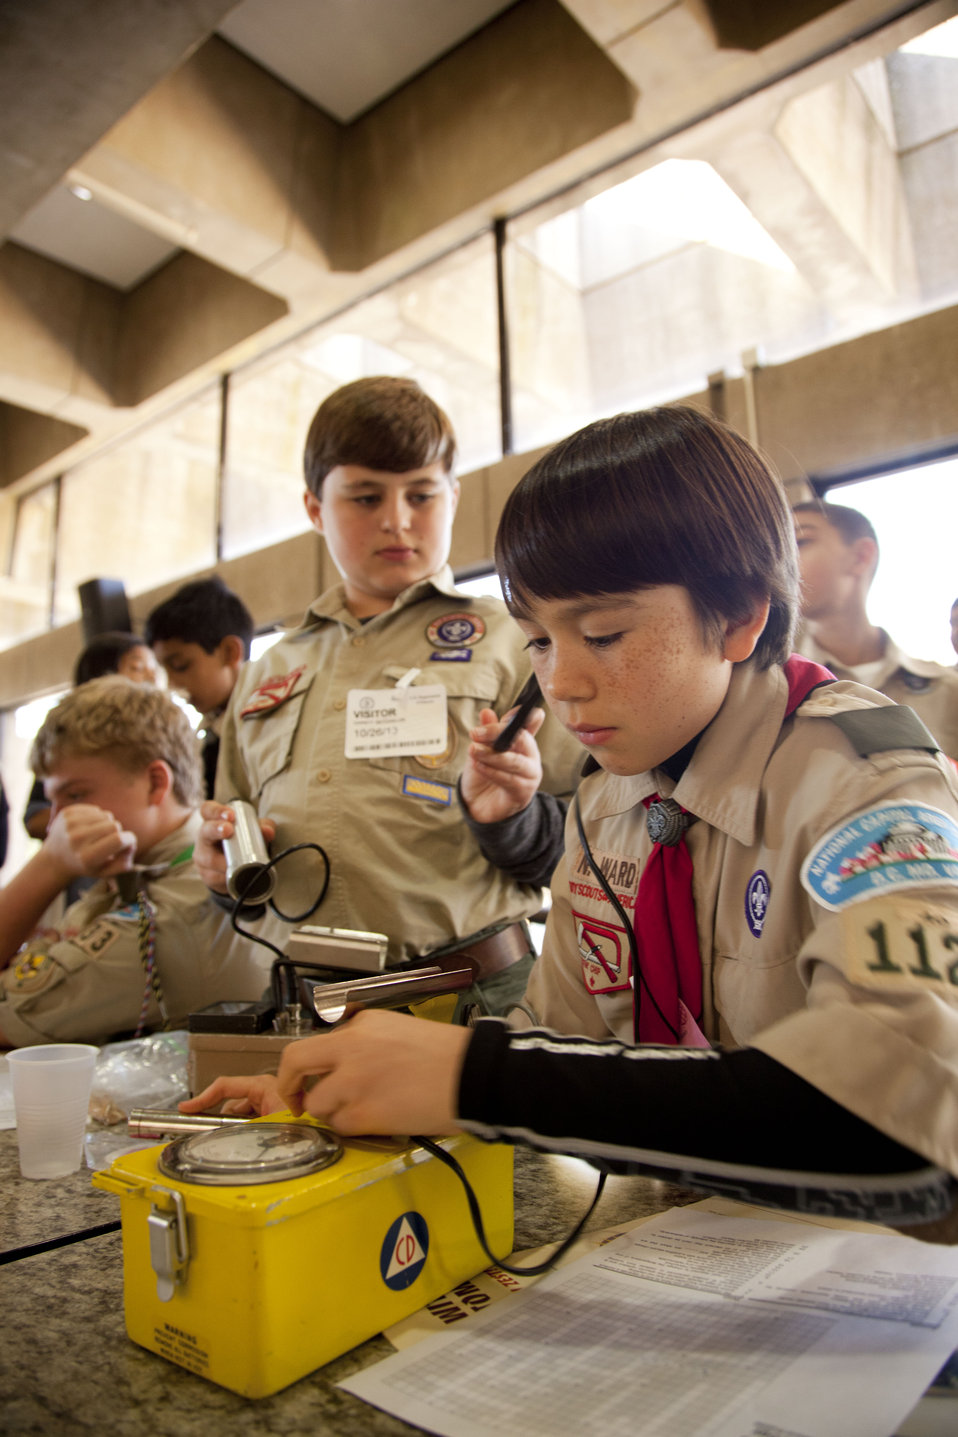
A Boy Scout uses a radiation survey meter.